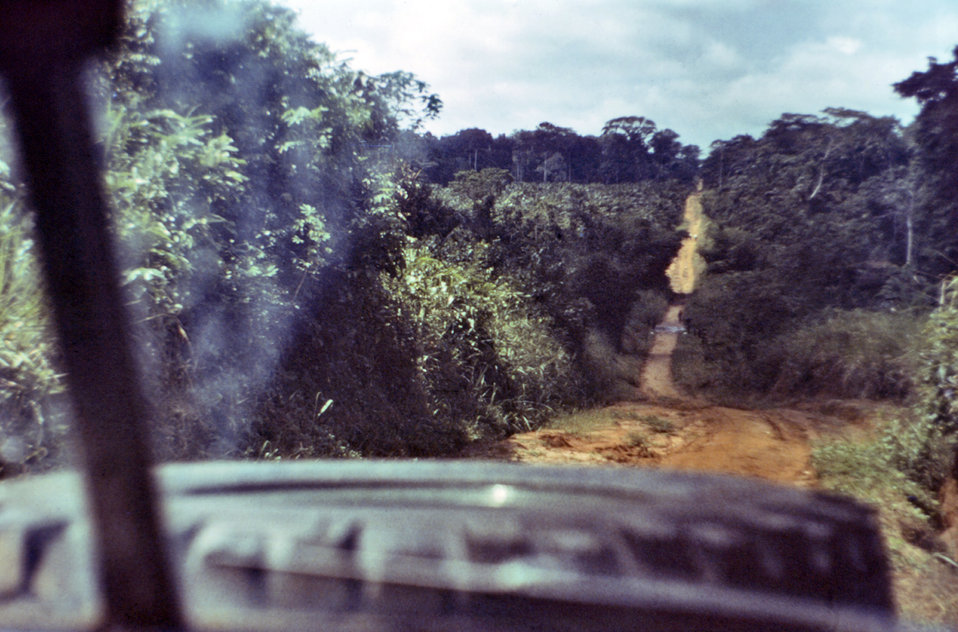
This photograph was taken from within the vehicle that transported suspected Ebola patient Del Conn during the first leg of his journey from Yambuku, Zaire, now known as the Democratic Republic of Congo, to South Africa. Notice the bumpy terrain the patient had to endure during the trip from Yambuku to Bumba, Zaire.